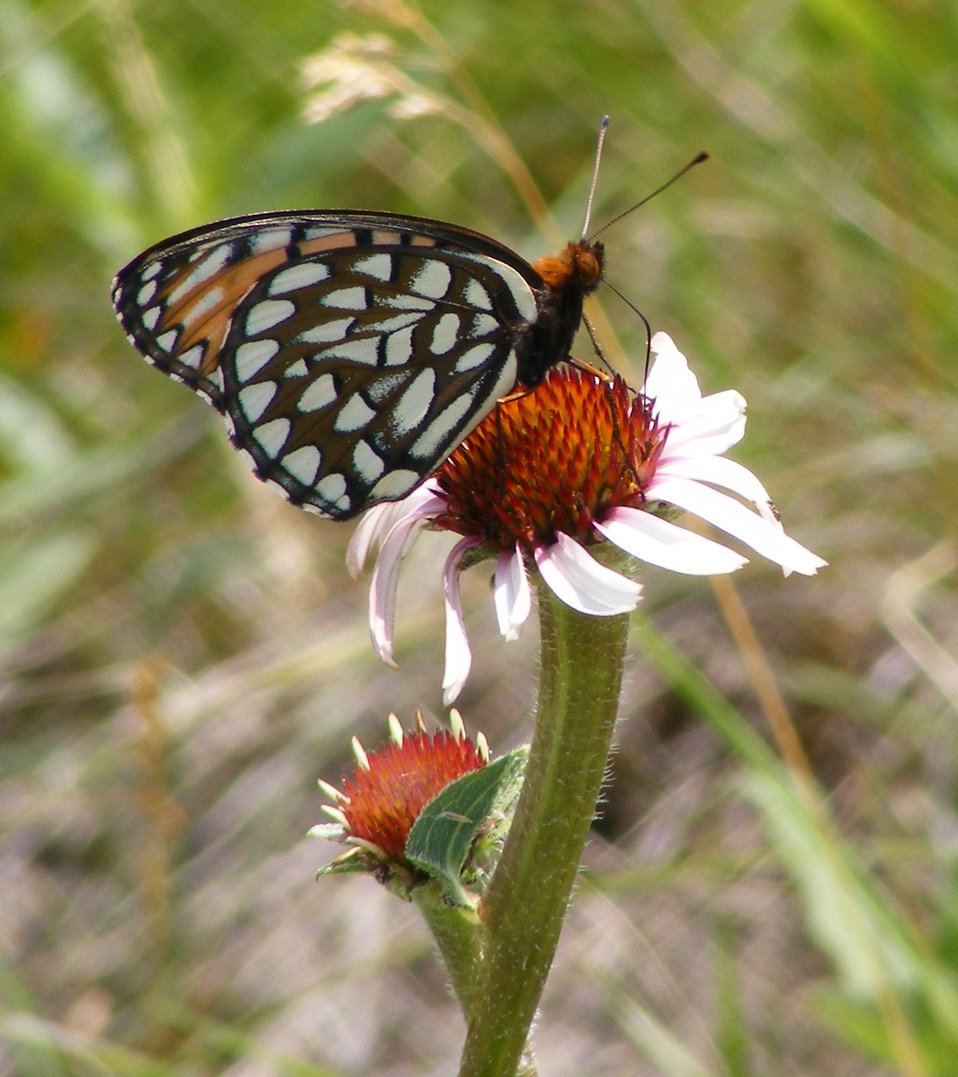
A Regal Visitor

A Regal Fritillary (Speyeria idalia) gets a meal from a purple coneflower (Echinacea angustifolia) at Lake Emma WPA in Waubay Wetland Management District.

Photo Credit: Laura Hubers / USFWS

Photo Contest Entry #134